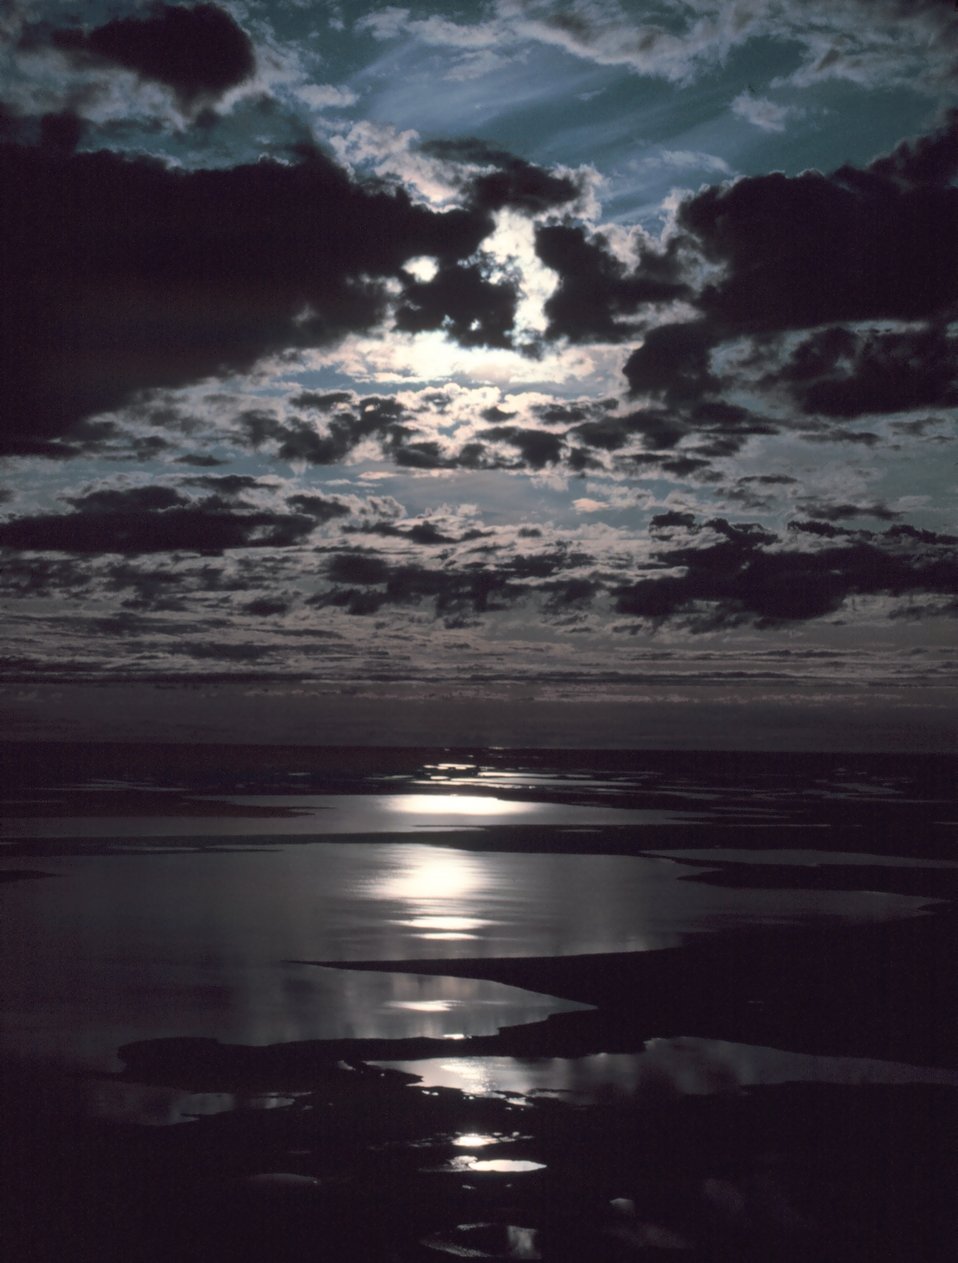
Moonbeams reflecting off the Beaufort Sea.